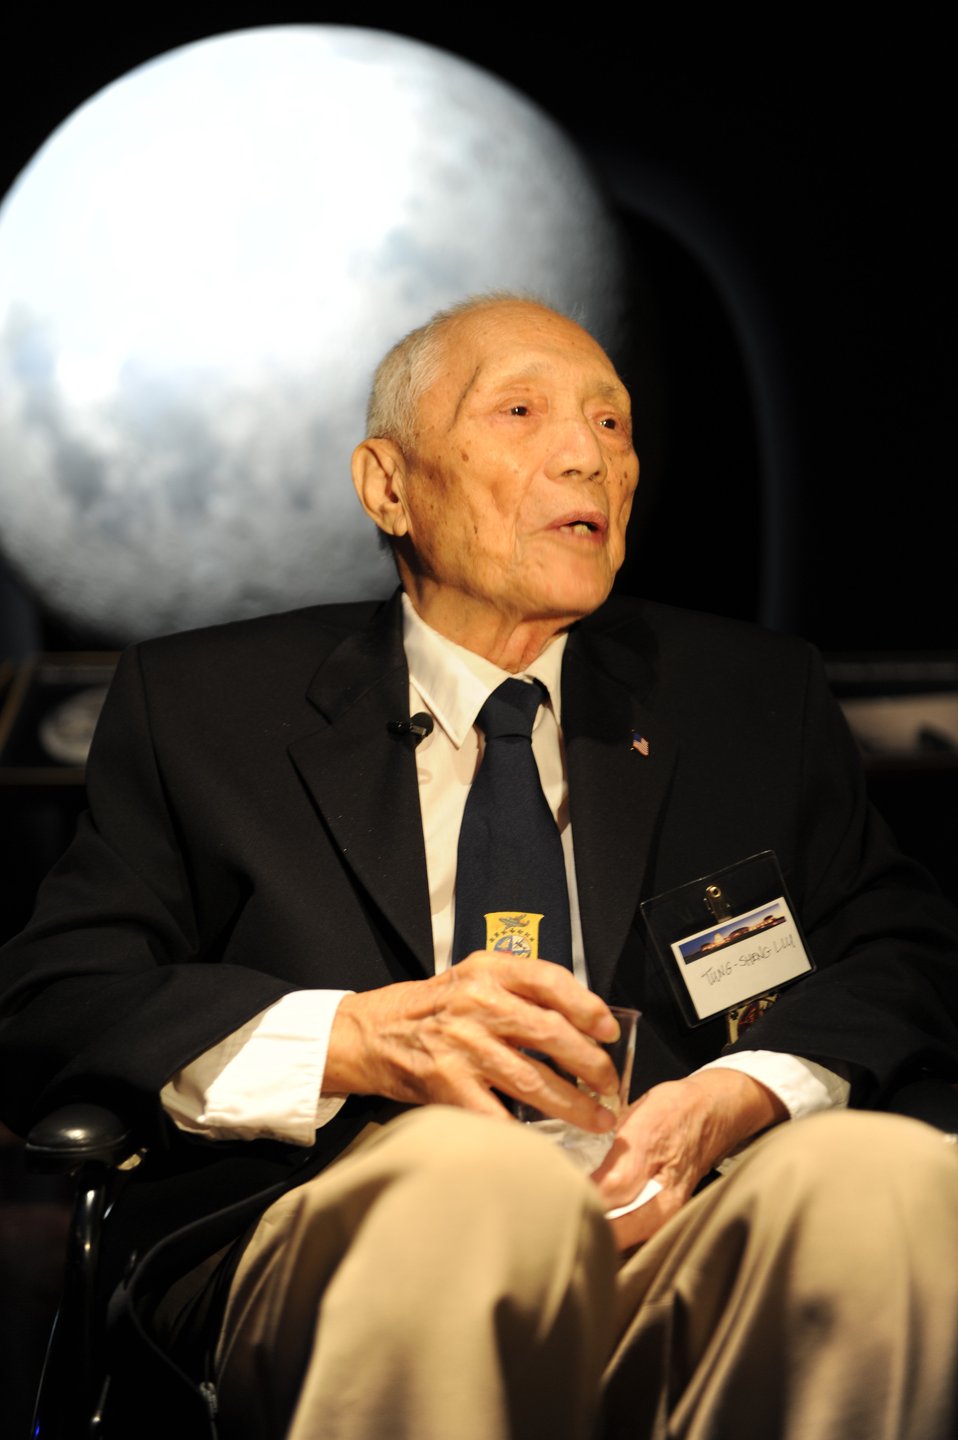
Stars visible at, from LA observatory

Friends of the Observatory visitor Tung Sheng Liu attends an event honoring Air Force members Nov. 17 at the Griffith Park Observatory in Los Angeles. Sheng Liu is a Chinese citizen who helped one of the Doolittle crews escape the clutches of the Japanese.